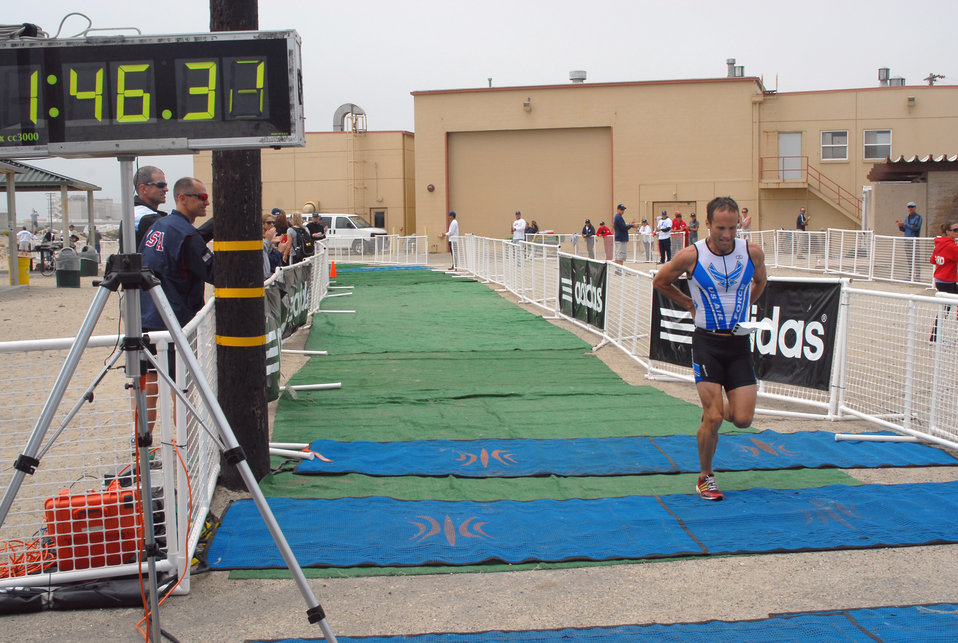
AF surgeon wins

Capt. James Bales is the first to cross the finish line in the men's Armed Forces Triathlon Championship June 5, 2010, at Naval Base Ventura County, Calif.